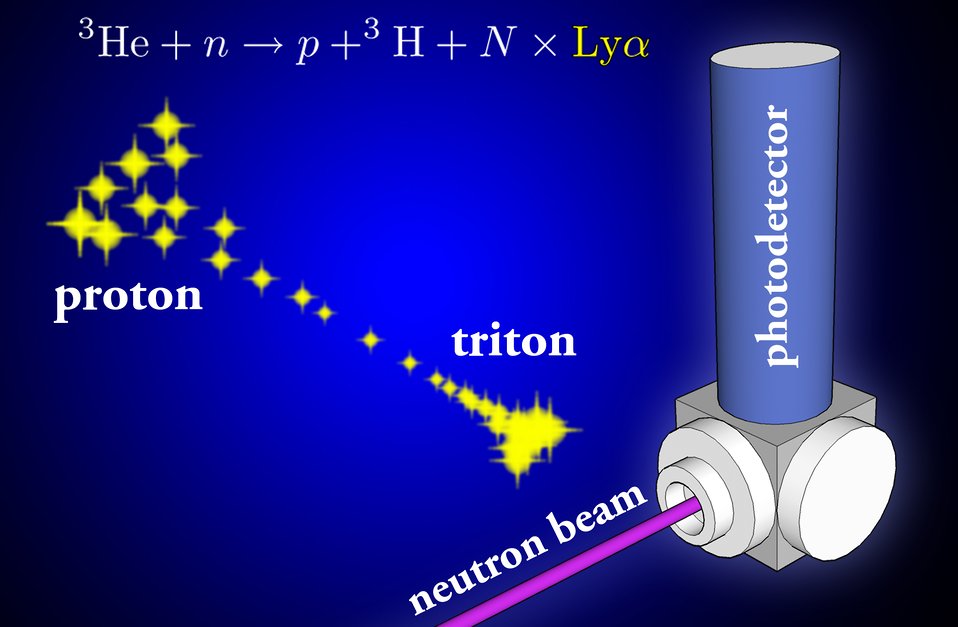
Neutrons; Lyman alpha photons

Neutron absorption by 3He yields tens of Lyman alpha photons, which result from the most fundamental energy jump in the hydrogen atom. This schematic illustrates the operation of a prototype Lyman alpha neutron detector (LAND).